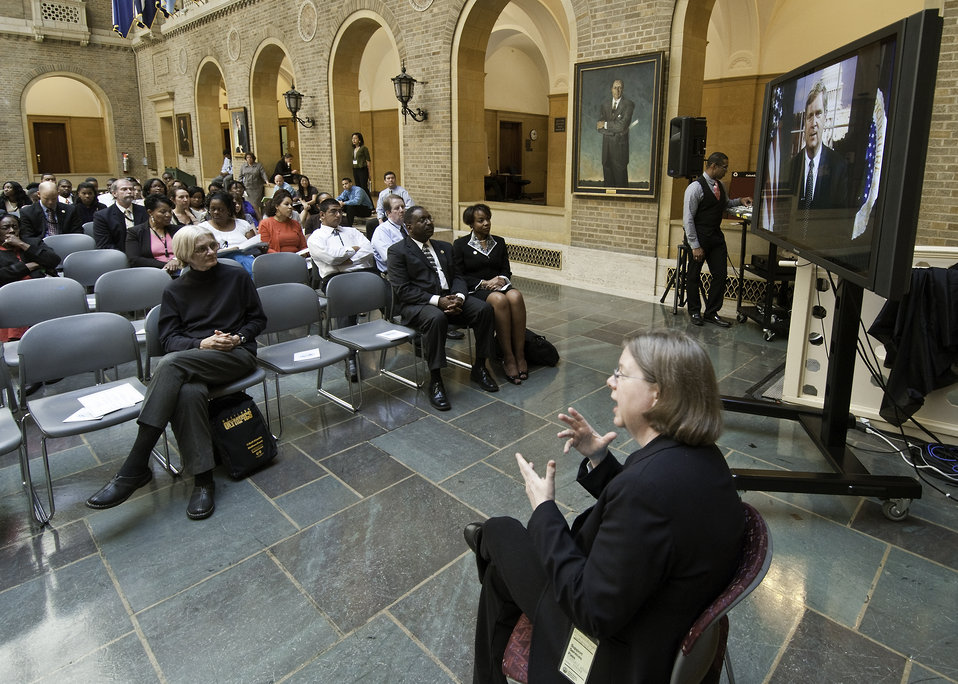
Agriculture Secretary Tom Vilsack spoke to the Departmental Management Interns at the US Department of Agriculture in Washington, DC, via a video presentation Tuesday, June 8, 2010.
USDA Photo 10di1393-12.